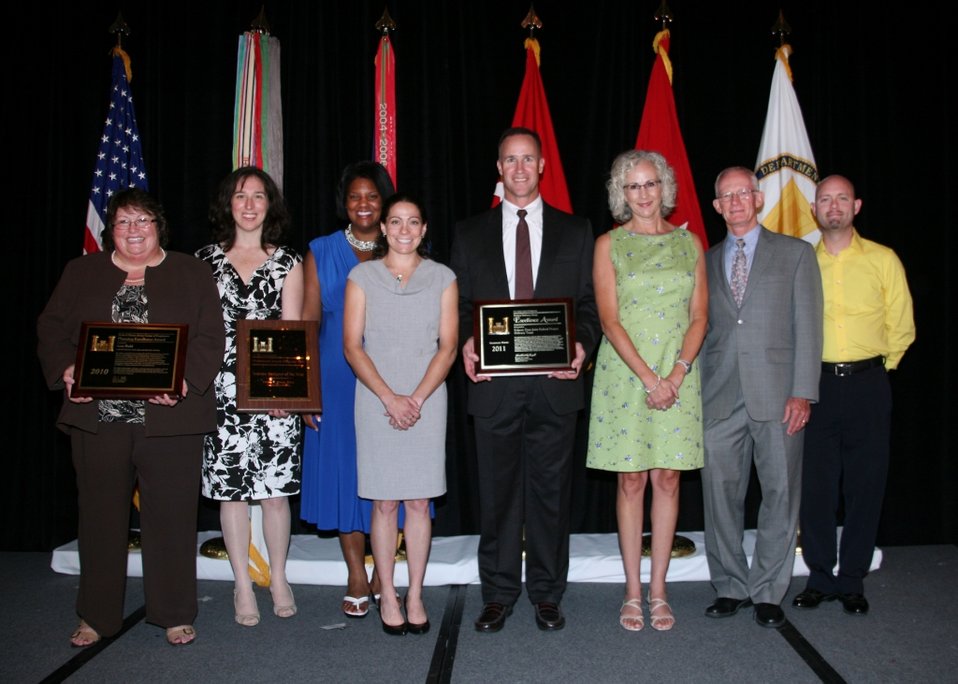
Sacramento District 2011 national award winners

Corps and Sacramento District employees were recognized during a national awards competition at the senior leaders conference in New Orleans, Aug. 1. (From left) Jane Ruhl, planner of the year; Debbie Owen, Interior Designer of the year; Pamela Amie, Folsom Joint Federal Project Project Delivery Team; Sarah Ross, Emerging Leader; Col. Michael Wehr; and Folsom Joint Federal Project Team members, Jane Rinck, David Neff, and Matthew Hancsarik